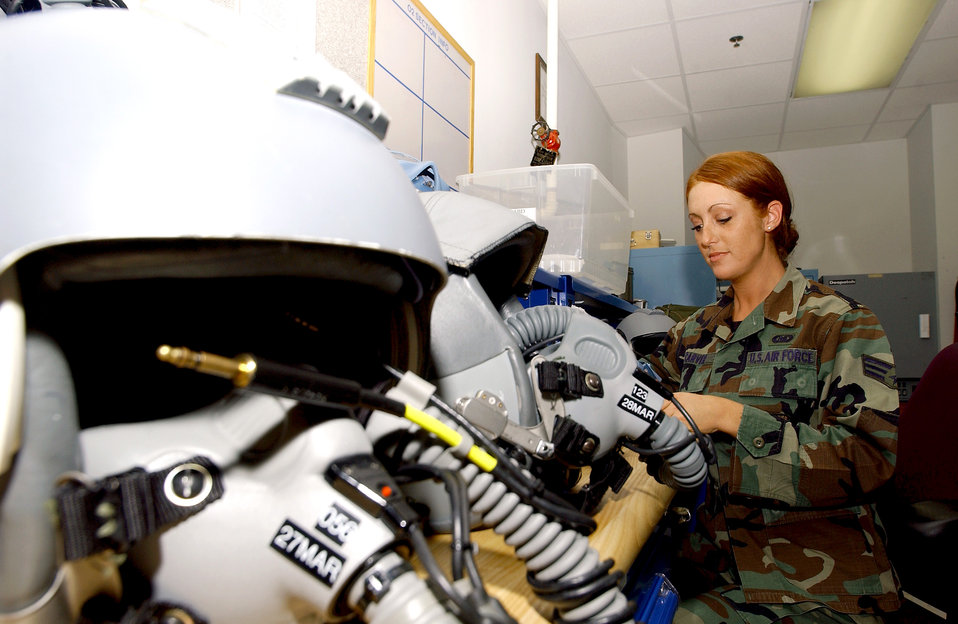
First step in saving lives

MACDILL AIR FORCE BASE, Fla. (AFPN) -- Senior Airman Corinna Carver inspects an HGU-55P helmet system. The helmet provides communication and a source of oxygen for pilots. Airman Carver is an aircrew life-support technician with the 91st Air Refueling Squadron.